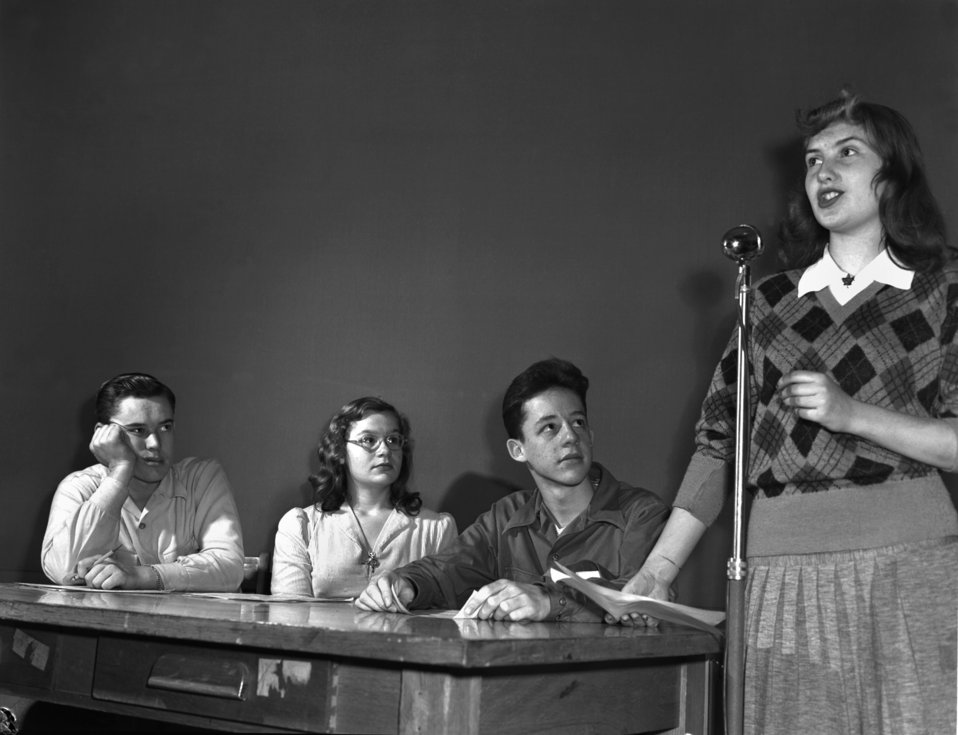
Youth Council on The Atomic Crysis Oak Ridge

3253-3 DOE photo Ed Westcott 1-16-1947 Oak Ridge Tennessee